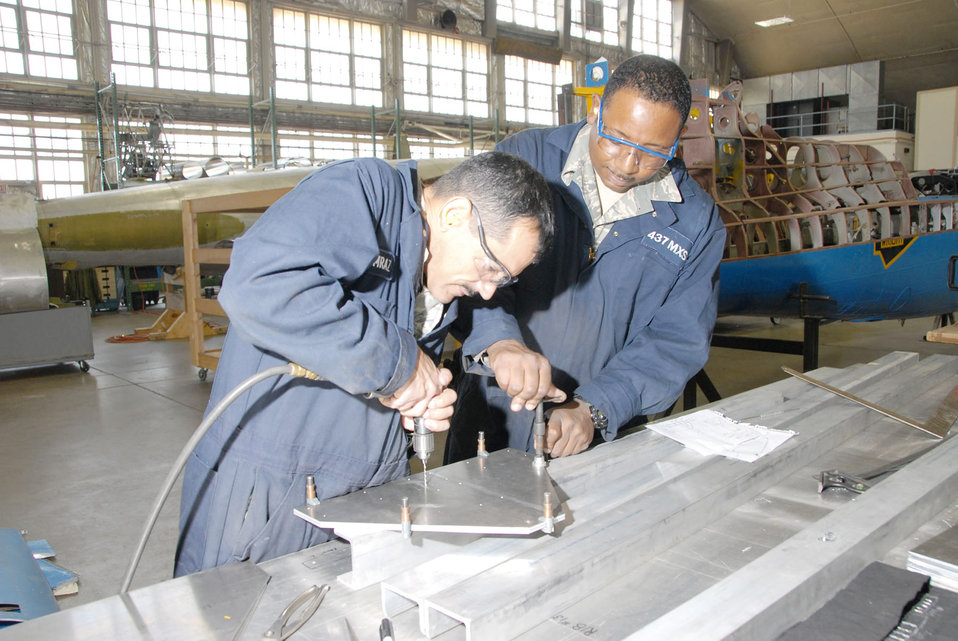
Musuem restoration

Reservists with the 315th Maintenance Squadron from Charleston Air Force Base, S.C., work on a stand for the B-17F Memphis Belle's wing during a two-week stay at Wright-Patterson Air Force Base, Ohio, where the group worked in the restoration hangar at the National Museum of the U.S. Air Force in nearby Dayton.